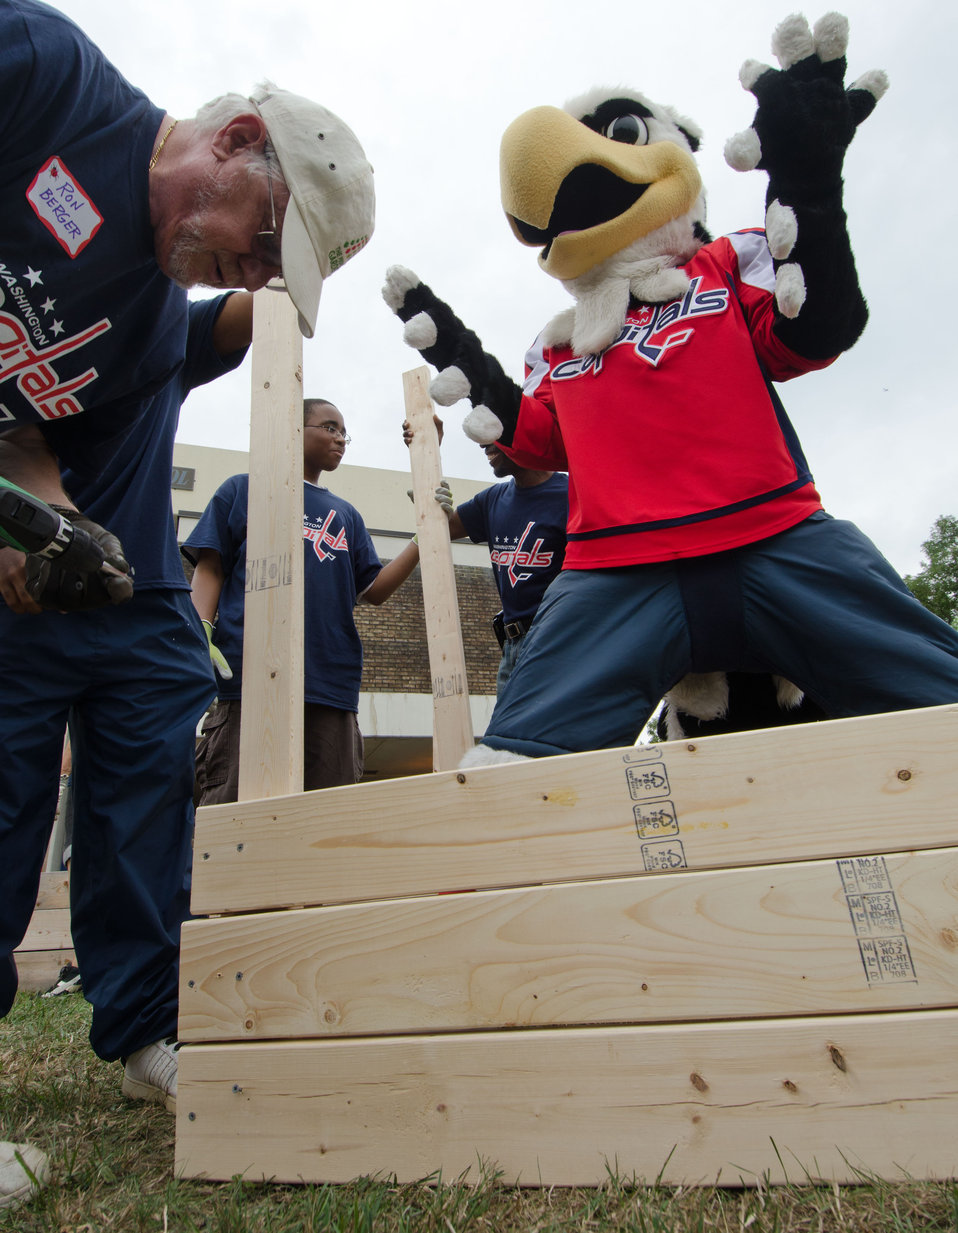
Washington Capitals' hockey mascot Slapshot shows his happiness at helping Ron Berger assemble a planter box, when U.S. Department of Agriculture (USDA) People’s Garden Executive Master Gardeners, friends, and family, along with Washington Capitals fans volunteer in District of Columbia Public Schools’ (DCPS) Beautification Day, on Saturday, August 25, 2012, at Thurgood Marshall Elementary School, in Washington, D.C. Each year people are invited to help “spruce up” public school facilities in preparation for the first day of school. More the 70 volunteers pitched in at this large school facility. The People’s Garden effort involves building and painting raised planter boxes, then preparing the soil mixture so they are “ready to grow.” Additionally, a team that includes descendants of U.S. Supreme Court Justice Thurgood Marshall assembles a prefabricated garden toolshed. The Justice’s son, John Marshall leads the team, which includes Brianna the Justice’s great-grand daughter in one of many multi-generational efforts at this school today. Washington Capitals Forward Mike Riberio, his family and mascot Slapshot participated in every project underway at Marshall School. From the outside gardens, to inside murals, and robotics worktable construction, the teams made their goals.